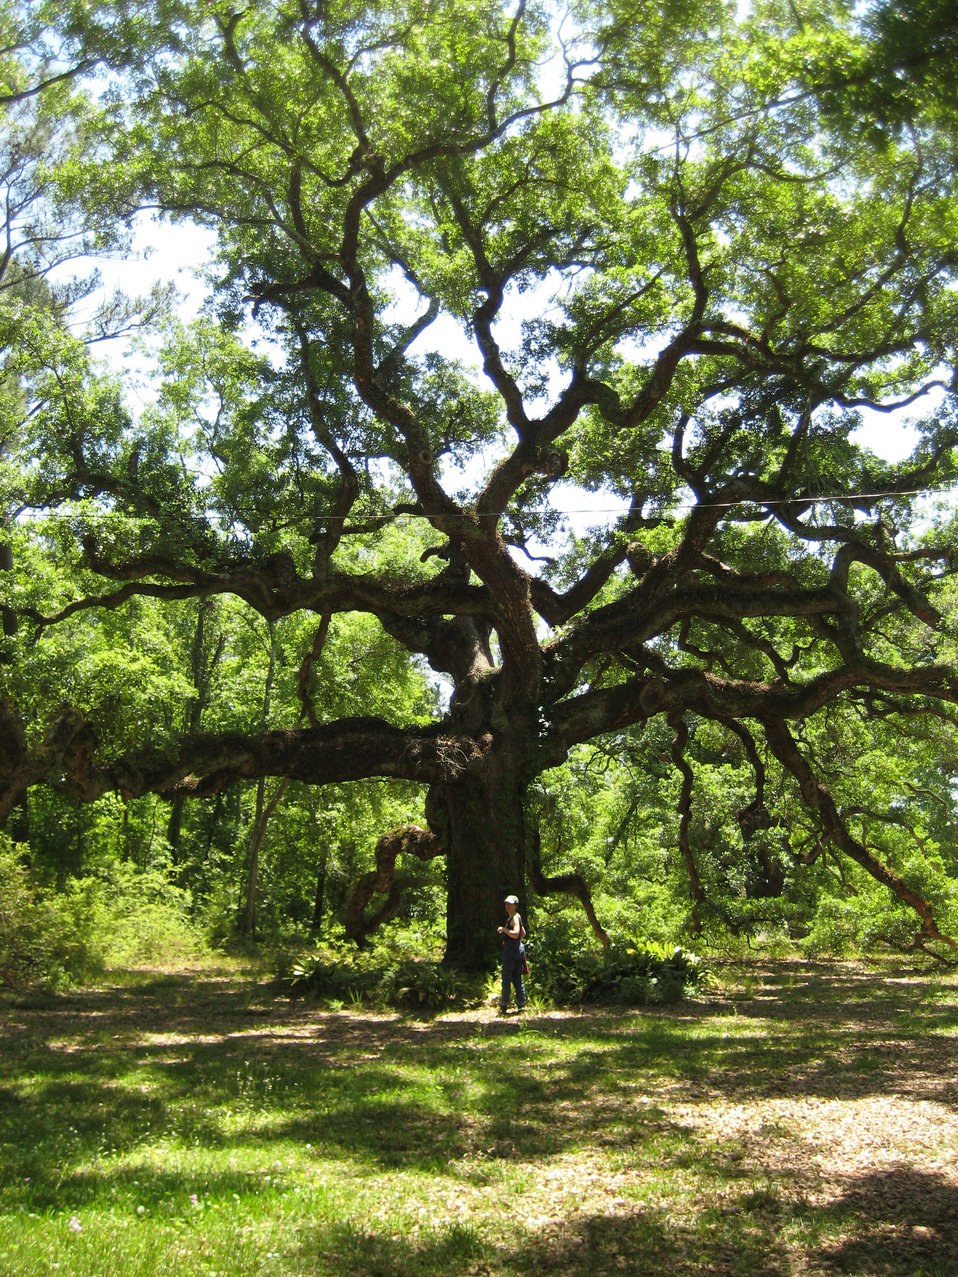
Majestic live oak in crucial migratory stopping region in Mississippi, United States. Supported by the Neotropical Migratory Bird Conservation Act.